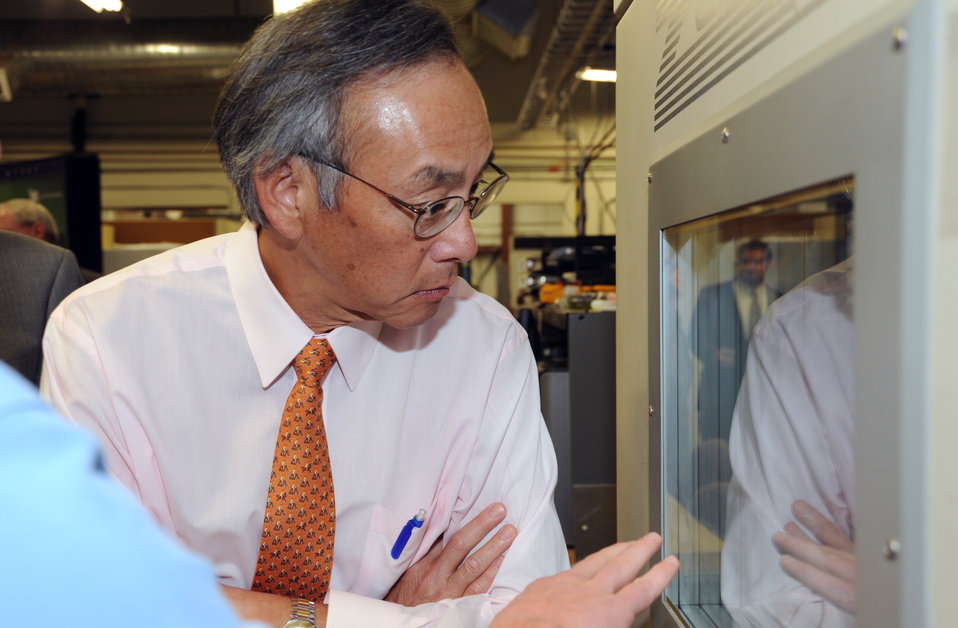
Energy Secretary Steven Chu observes a battery in an environmental chamber undergoing at test protocol to determine how the battery functions in relation to warranty at INL.